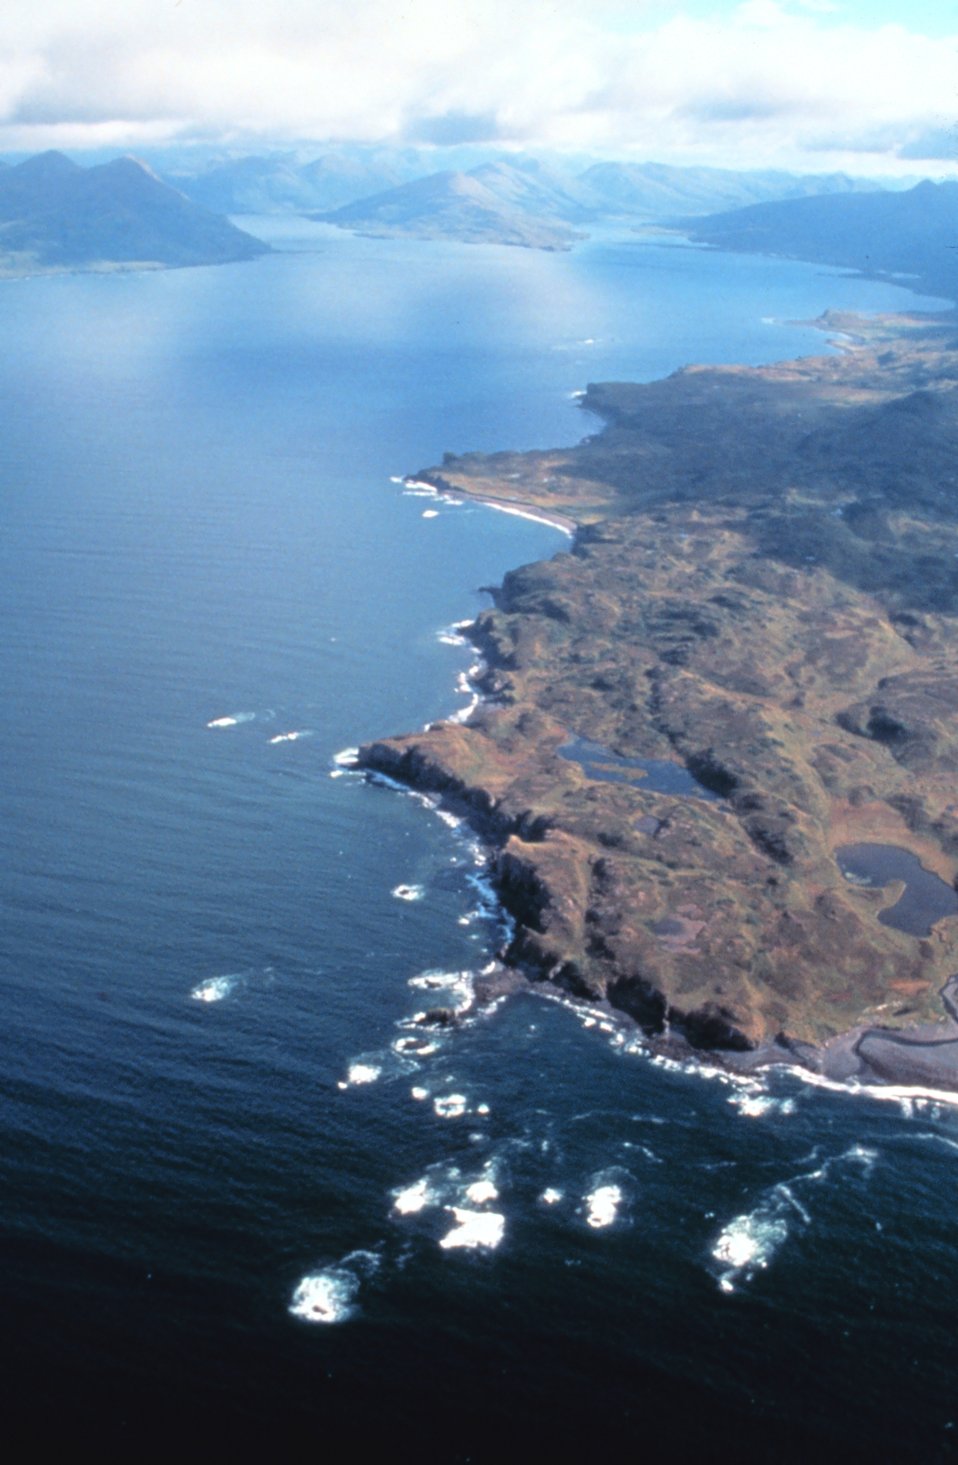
Rugged coastline of Prince William Sound area